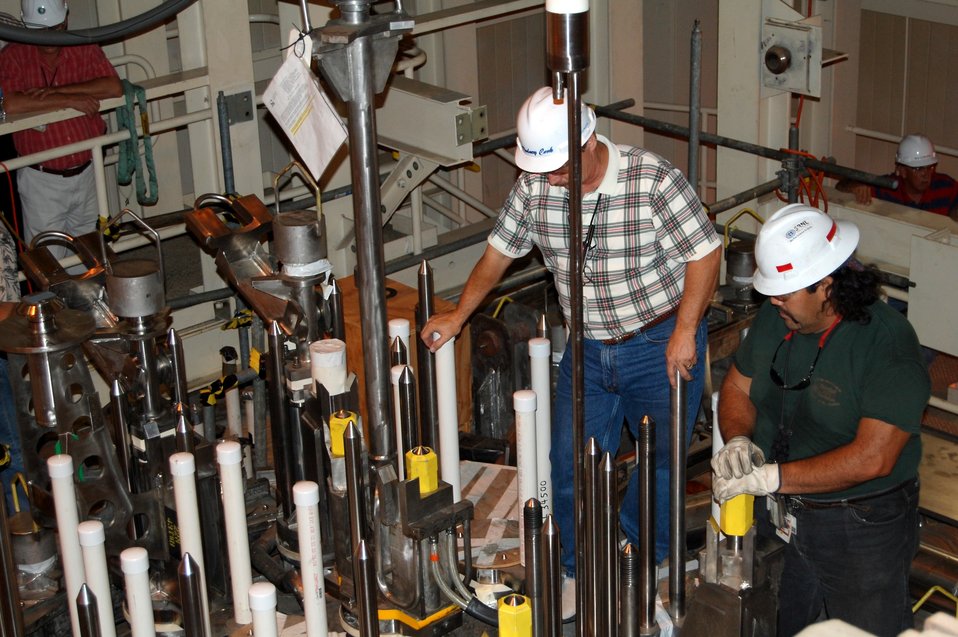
Bubbler Technology at SRS

Bubbler technology is being tested prior to placement in the 64-ton melter at the SRS Defense Waste Processing Facility. The advanced technology injects argon gas into the superheated glass and waste mixture in the melter allowing for more efficient stirring of the melt pool. This improvement, along with other enhancements, will increase the production rate of vitrified waste by approximately 40 percent.